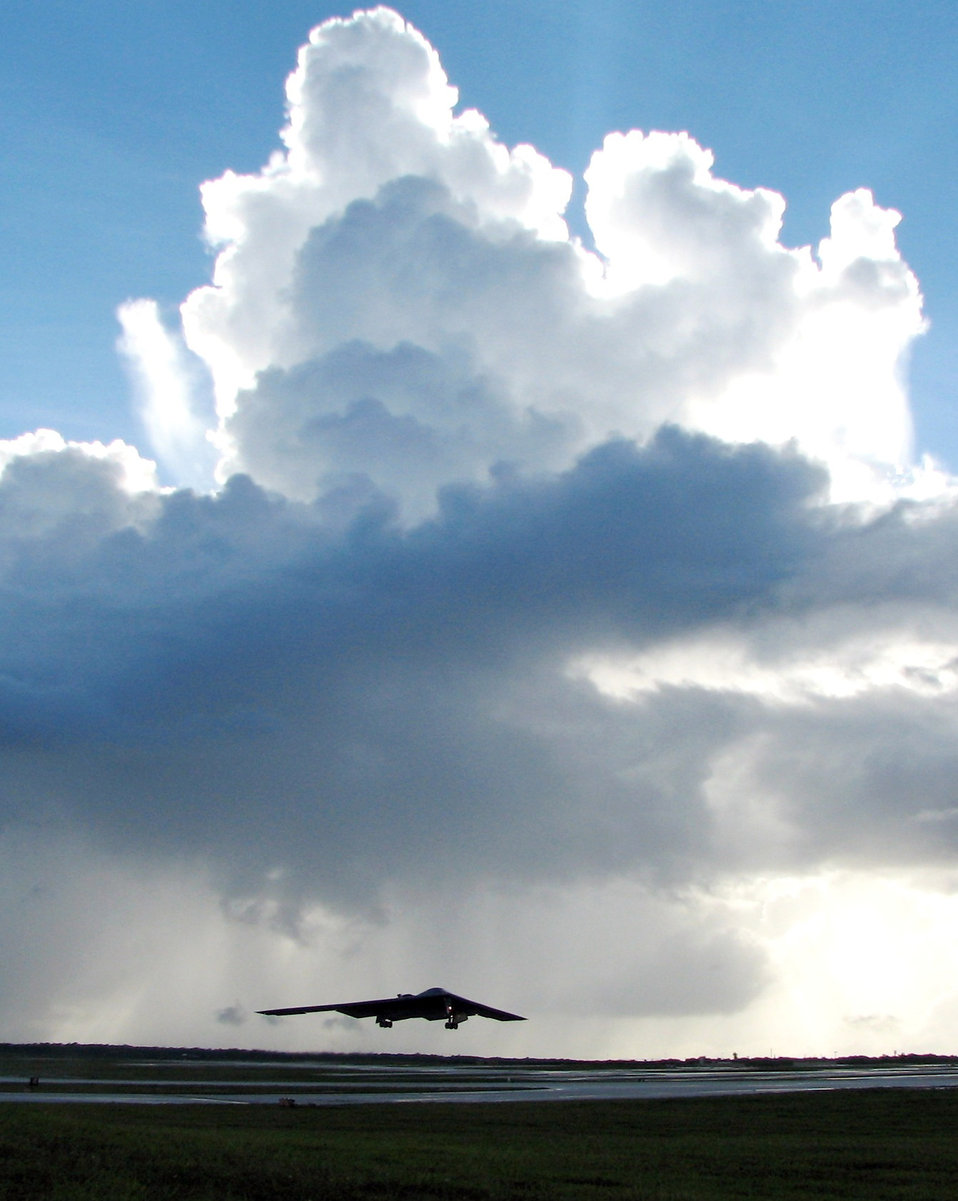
Whiteman B-2s complete successful Andersen deployment

A B-2 Spirit from the 13th Expeditionary Bomb Squadron departs on a training mission during one of the final sorties of a four-month deployment to Andersen Air Force Base, Guam, Aug. 24. The 13th and 393rd EBS flew more than 140 sorties and released more than 330 weapons during the deployment. B-2 aircraft, pilots, maintainers and support staff deployed from the 509th Bomb Wing at Whiteman AFB, Mo.